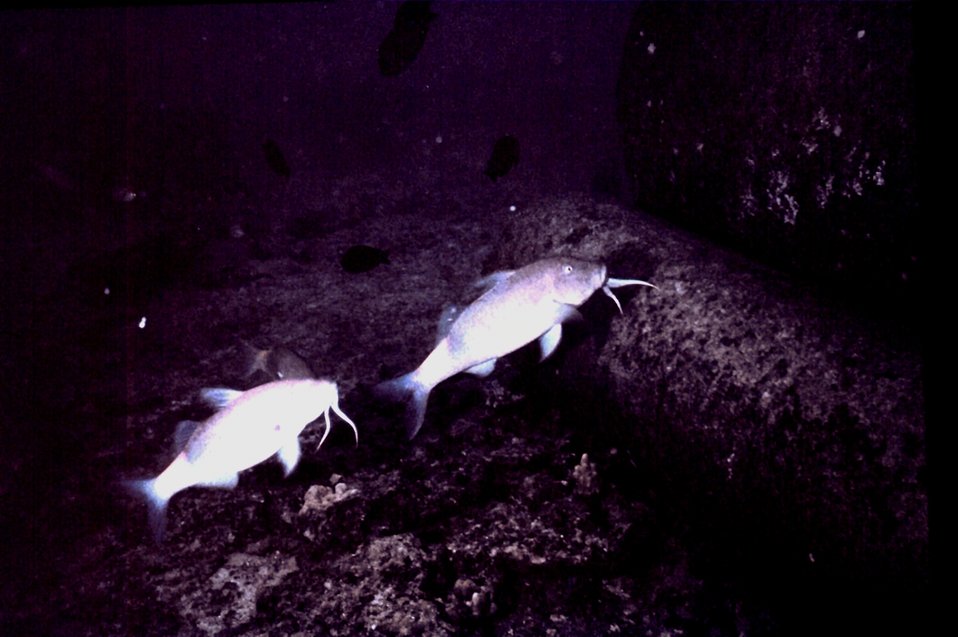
Goatfish - Parupeneus chryserydros - with goat whiskers.